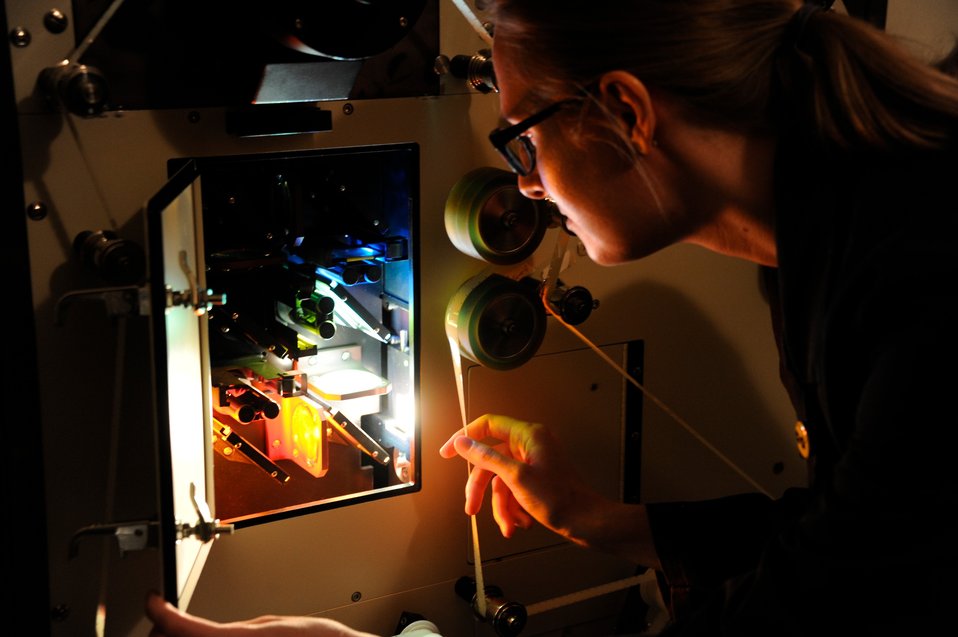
Heidi Holmstrom checks the colored light valves in the BHP printer.; Location: Archives 2 - Motion Picture Preservation Lab, College Park, MD